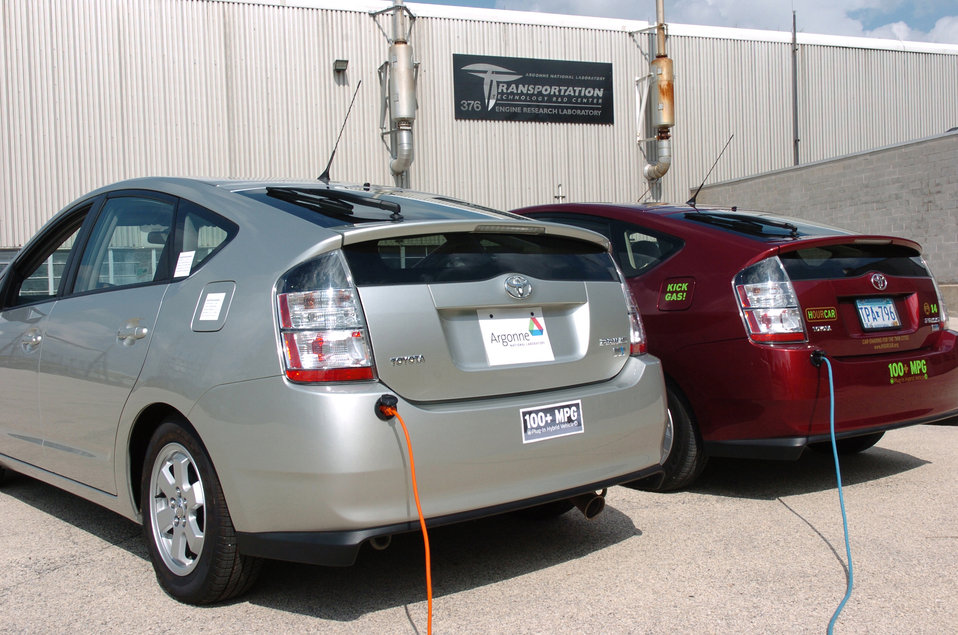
Plug-In Hybrid Electric Vehicles (PHEV) are tested at Argonne's Transportation Technology R&D Center.

PHEV technology is part of the President's Advanced Energy Initiative, which emphasizes the development of technologies that can significantly reduce the nation's dependence on foreign oil. PHEV is similar to the hybrid electric vehicle (HEV), but has a larger battery that is charged both by the vehicle's gasoline engine and from plugging into a standard 110 volts electrical outlet for a few hours each. It is estimated that it can get more than 100 miles per gallon while the vehicle runs primarily on the battery, get more than 30-55 miles per gallon that most of today's HEV achieve. In addition, it may be less costly to drive than a gasoline-powered vehicle; it would draw power from the electric grid when charging.